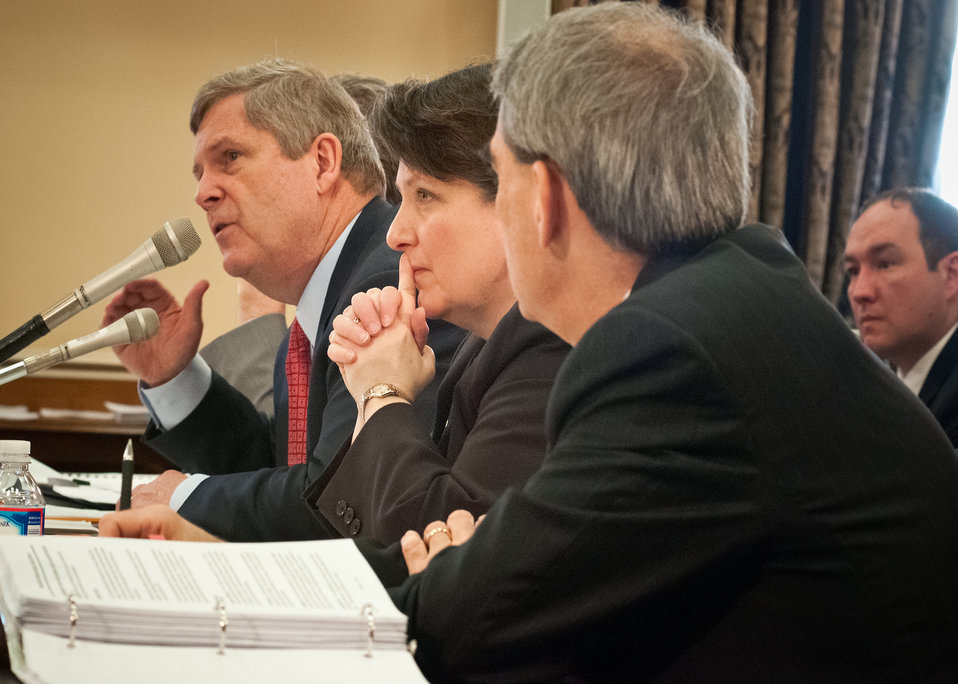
Agriculture Secretary Tom Vilsack, answers questions posed by members of the House Agriculture Appropriations Committee. Accompanying Secretary Vilsack were Dr. Kathleen Merrigan (center), Deputy Secretary and Michael Young (right), Budget Officer. The meeting was held in the Rayburn House Office Building on Friday, February 17, 2012 in Washington, D.C. to discuss the United States Department of Agriculture budget.